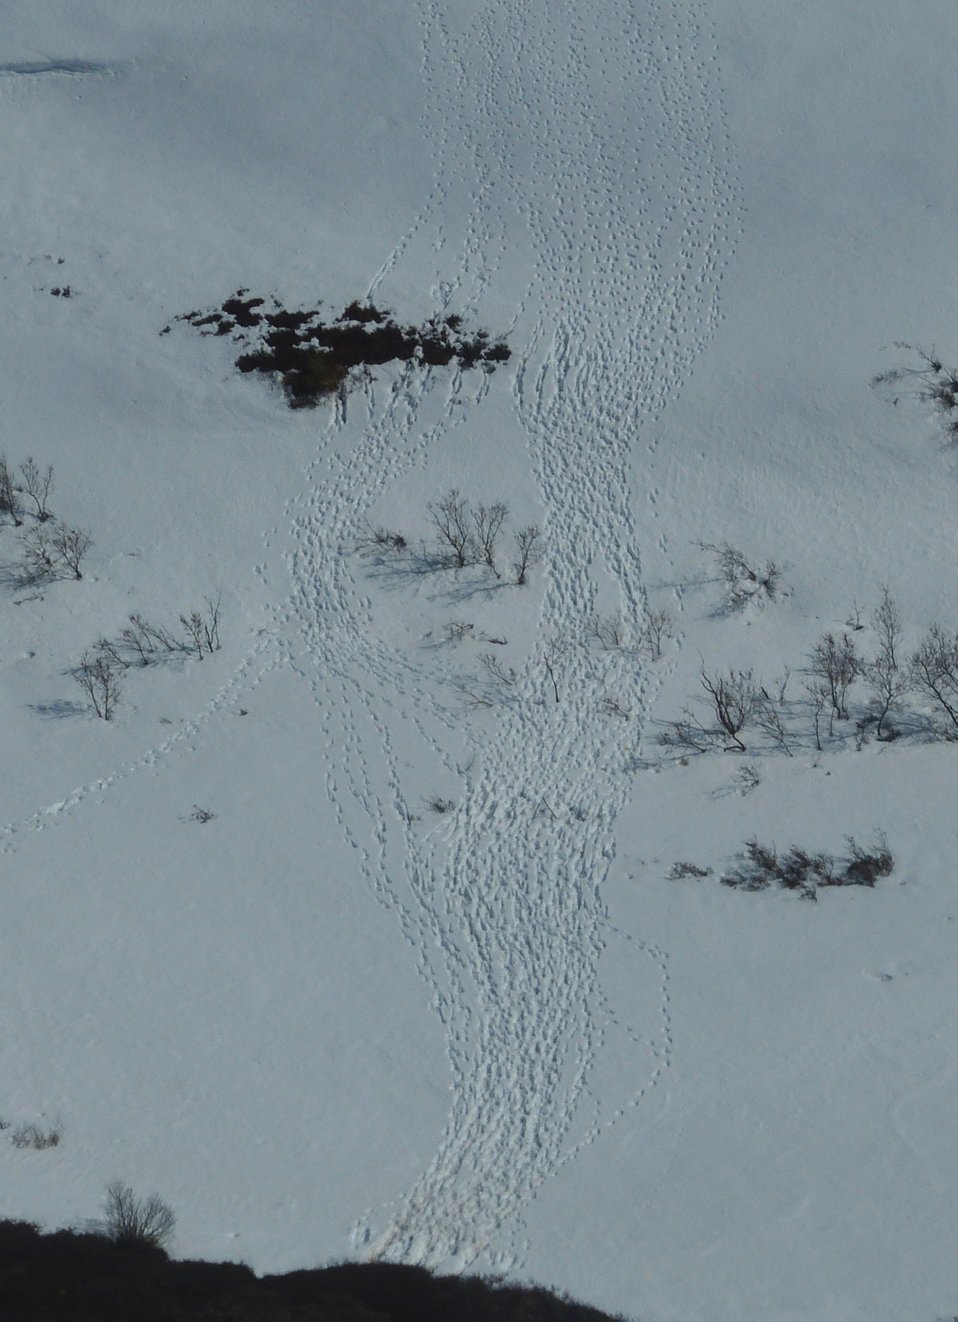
Caribou tracks in Kilbuck Mountains on Yukon Delta National Wildlife Refuge

Photo credit: Kristine Sowl
USFWS, Yukon Delta National Wildlife Refuge